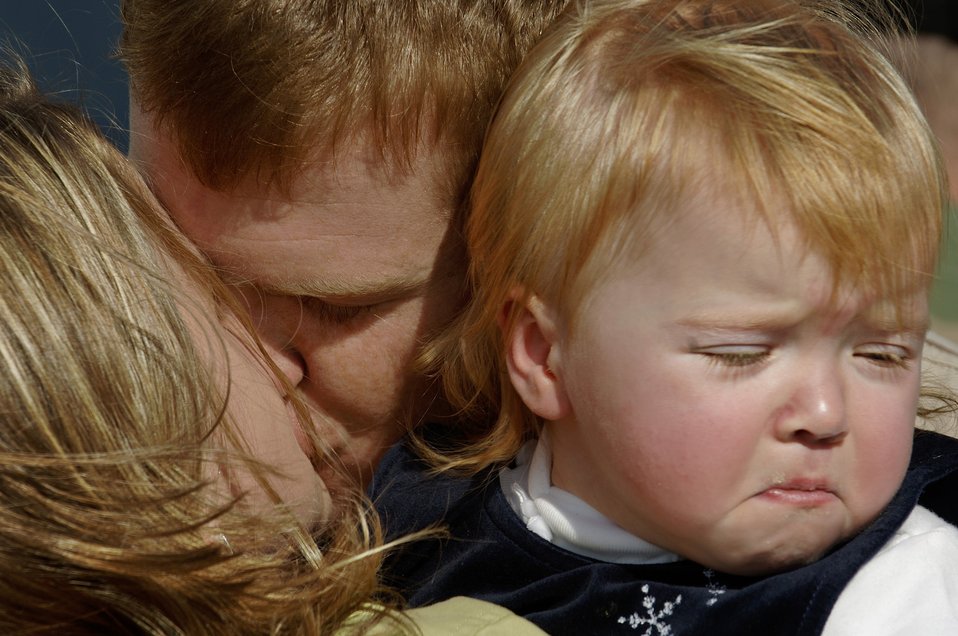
1St Security Forces Return

LANGLEY AIR FORCE BASE, Va. (AFPN) -- Staff Sgt. Jon Hendrickson kisses his wife, Cara and daughter, Ashton after returning home from an eight month deployment to Iraq Jan. 9. Sergeant Hendrickson is with the 1st Security Forces Squadron.